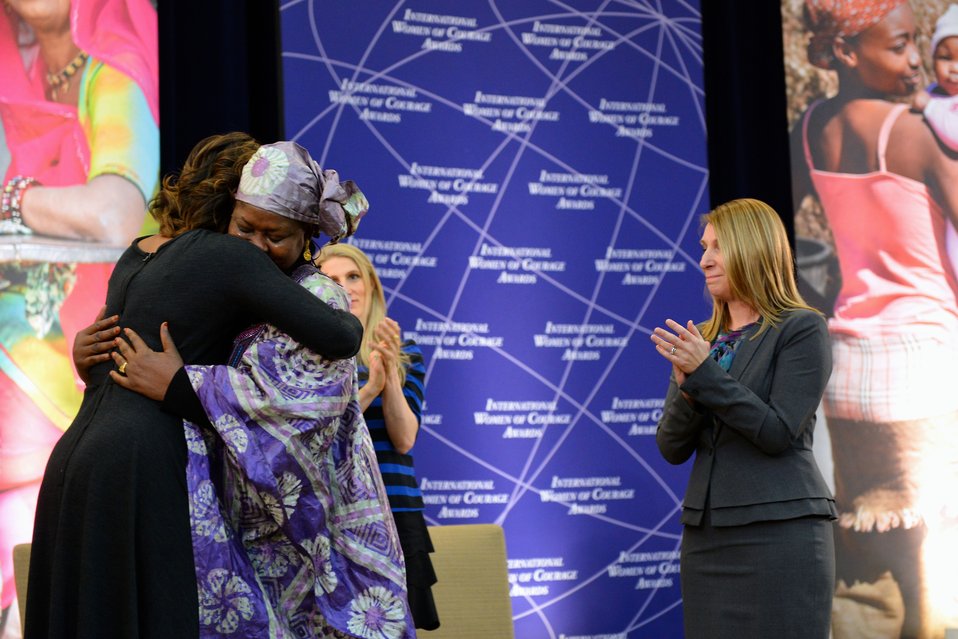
First Lady Michelle Obama Embraces IWOC Awardee Fatimata Touré of Mali

First Lady Michelle Obama embraces 2014 Secretary of State’s International Women of Courage Awardee Fatimata Touré, Community Activist and Executive Director of the Groupe de Recherche, de’Etude, de Formation Femme-Action in Mali, at the U.S. Department of State in Washington, D.C., on March 4, 2014.